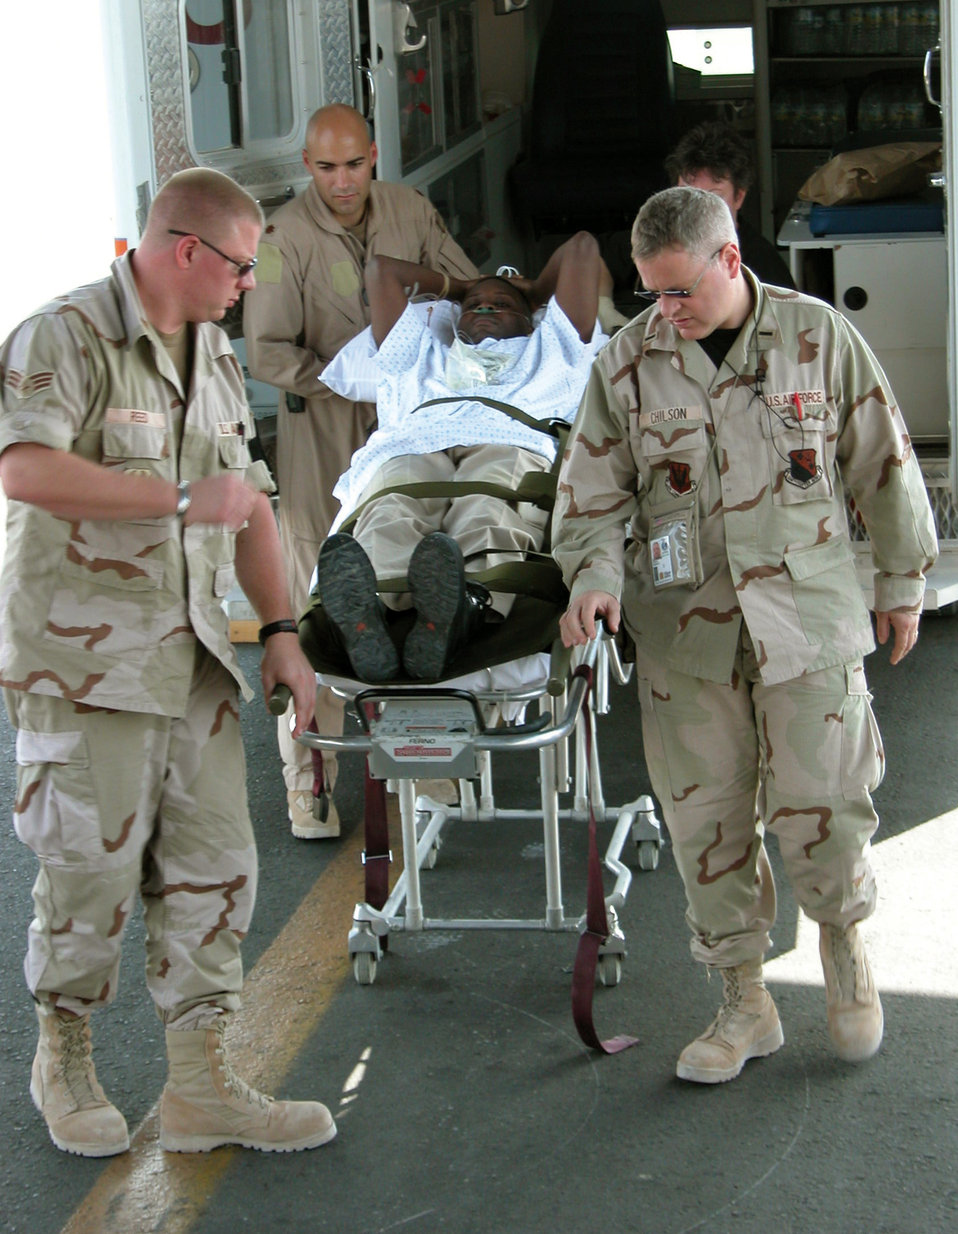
Medics, aircrews work together to save lives

SOUTHWEST ASIA -- Master Sgt. Maxie Gainey secures litters holding aeromedical evacuation supplies during a mission. He is a C-130 Hercules loadmaster deployed from Pope Air Force Base, N.C.